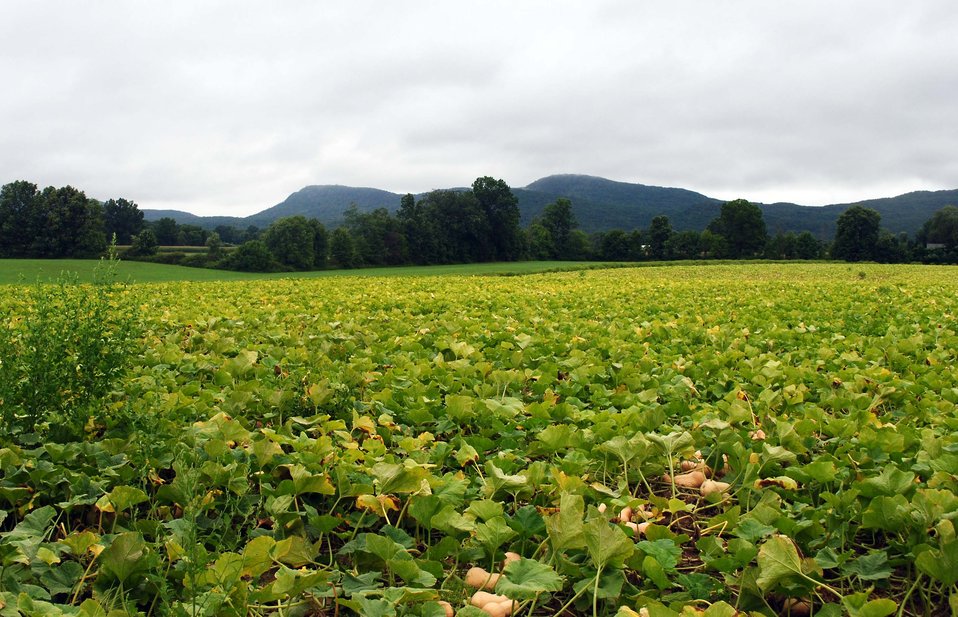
Squash Field

Field of squash with Holyoke Range in background. Fort River Division of the Silvio O. Conte National Wildlife Refuge, Hadley, MA.